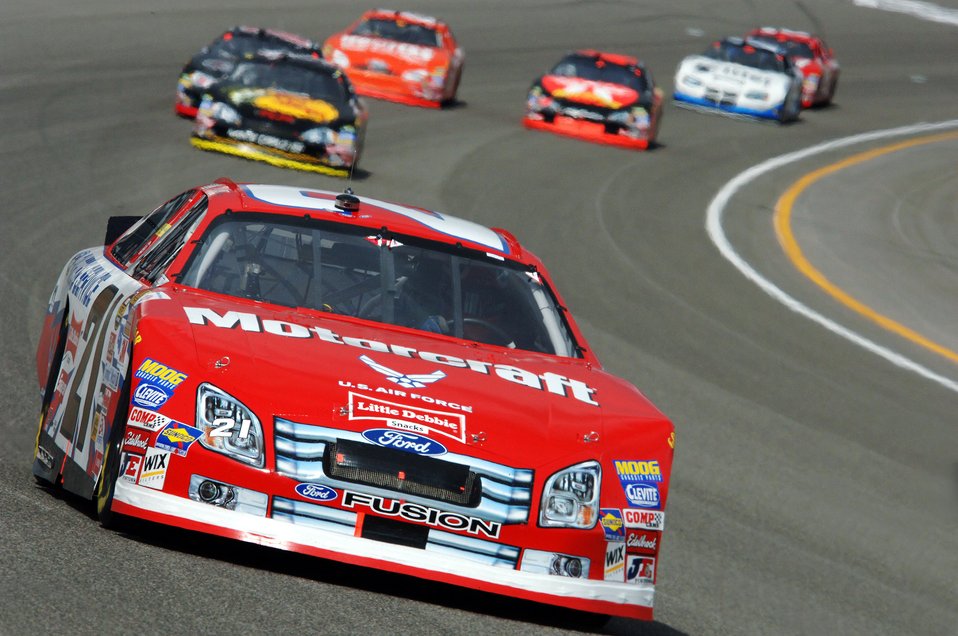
NASCAR flies

The U.S. Air Force #21 Motorcraft race car driven by Ken Schrader makes its way around the track during the NASCAR UAW-DaimlerChrysler 400 at the Las Vegas Motor Speedway, Las Vegas, Nev., Sunday, March 12, 2006. The team's day ended with engine problems on lap 187, finishing in 41st place.